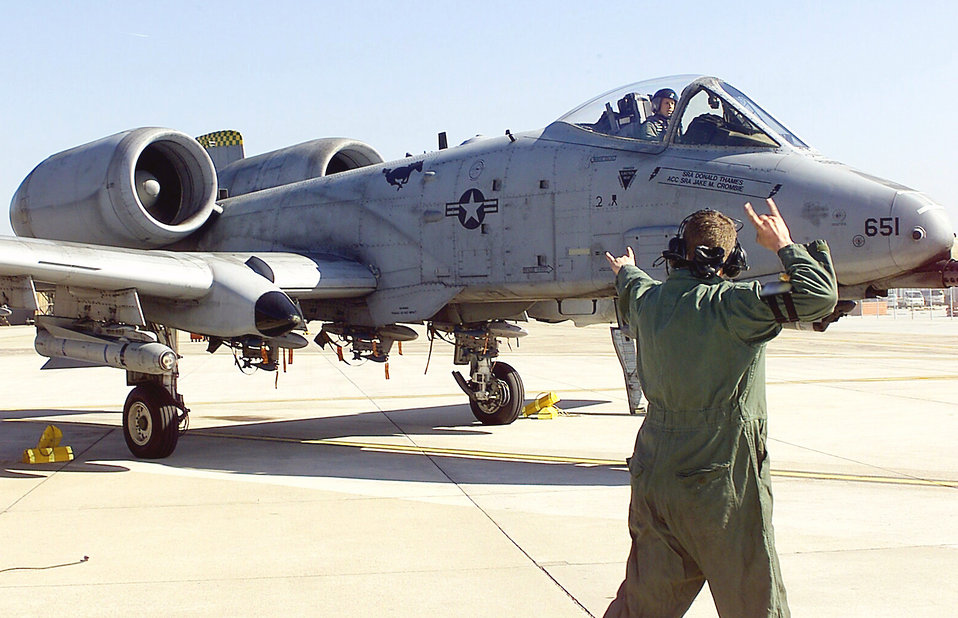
Inspected launch

OSAN AIR BASE, South Korea -- Tech. Sgt. Chris R. Marshel performs an end of runway inspection on an A-10 Thunderbolt II here March 2. Tech. Sgt. Marshel is an end of runway supervisor with the 51st Aircraft Maintenance Squadron.